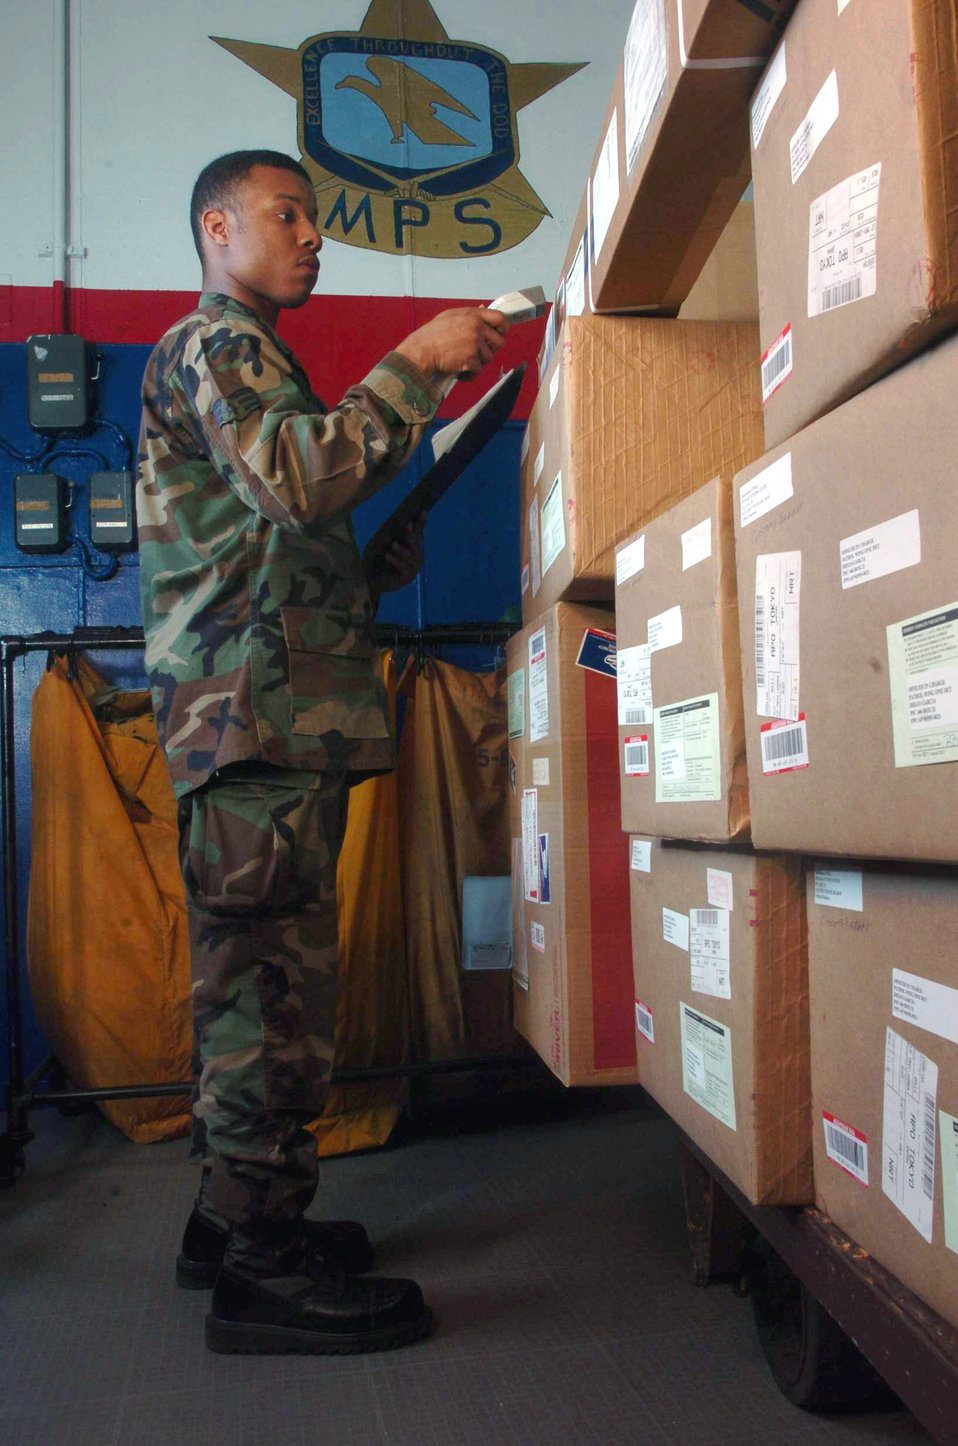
Yokota mail

YOKOTA AIR BASE, Japan -- Senior Airman Stacey Bailey uses a scanner to track registered mail at the mail processing facility here. He is assigned to Detachment 2 of the Air Postal Squadron. The detachment oversees the movement, sorting and distribution of more than 50 million pounds of mail annually.